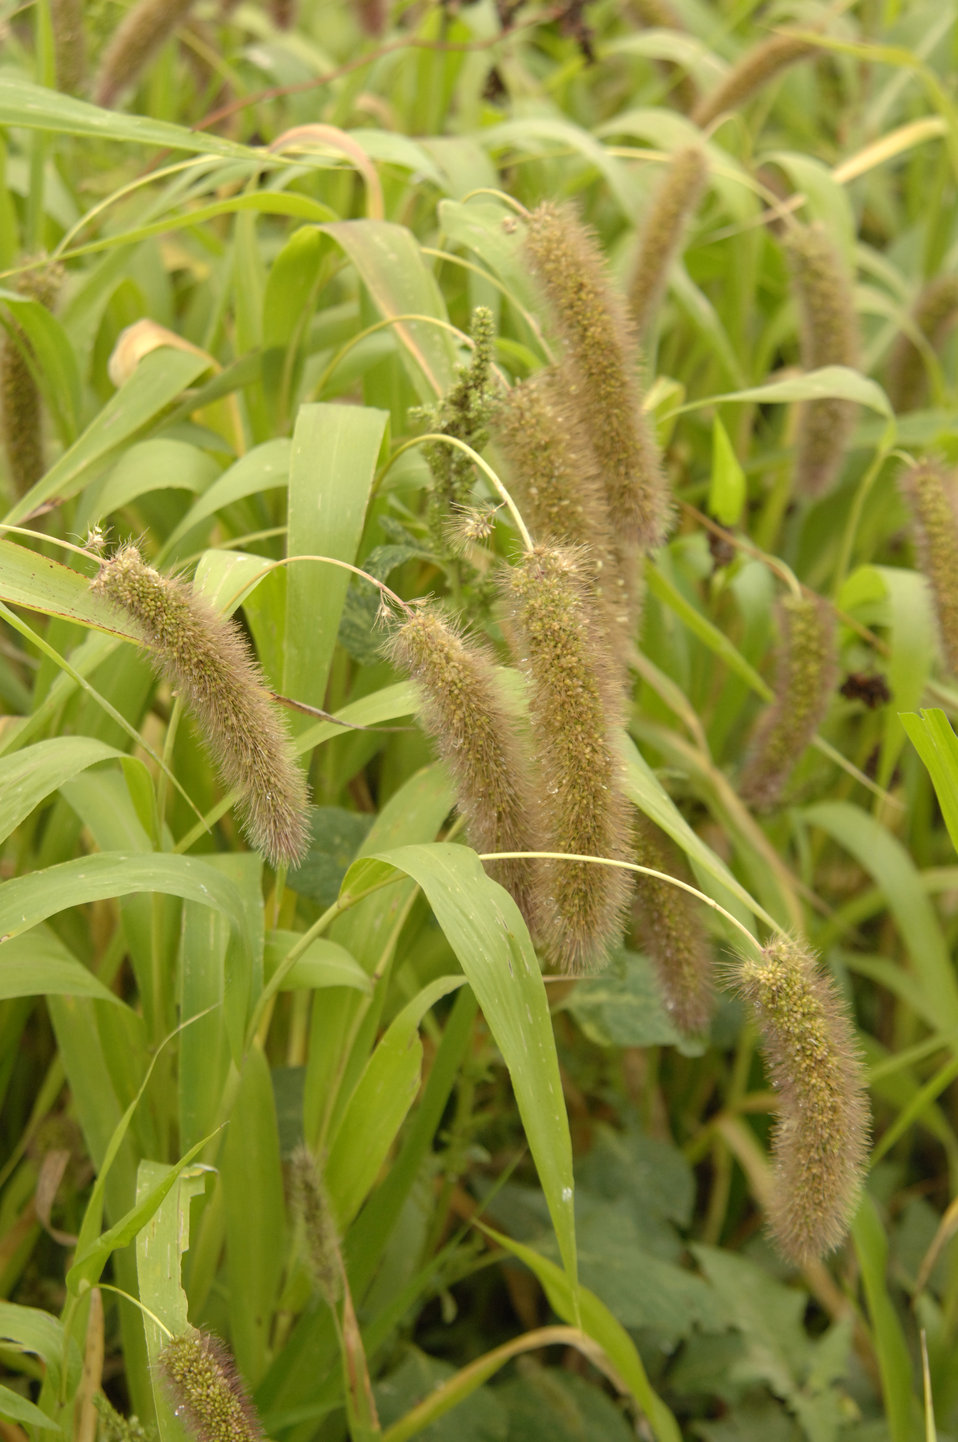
The U.S. Department of Agriculture’s (USDA) Natural Resources Conservation Service (NRCS) Conservation Reserve Enhancement Program (CREP) uses Native grasses to preserve wetland areas in Tidewater County, VA on September 11, 2008. CREP is a voluntary land retirement program that helps agricultural producers protect environmentally sensitive land, decrease erosion, restore wildlife habitat, and safeguard ground and surface water.